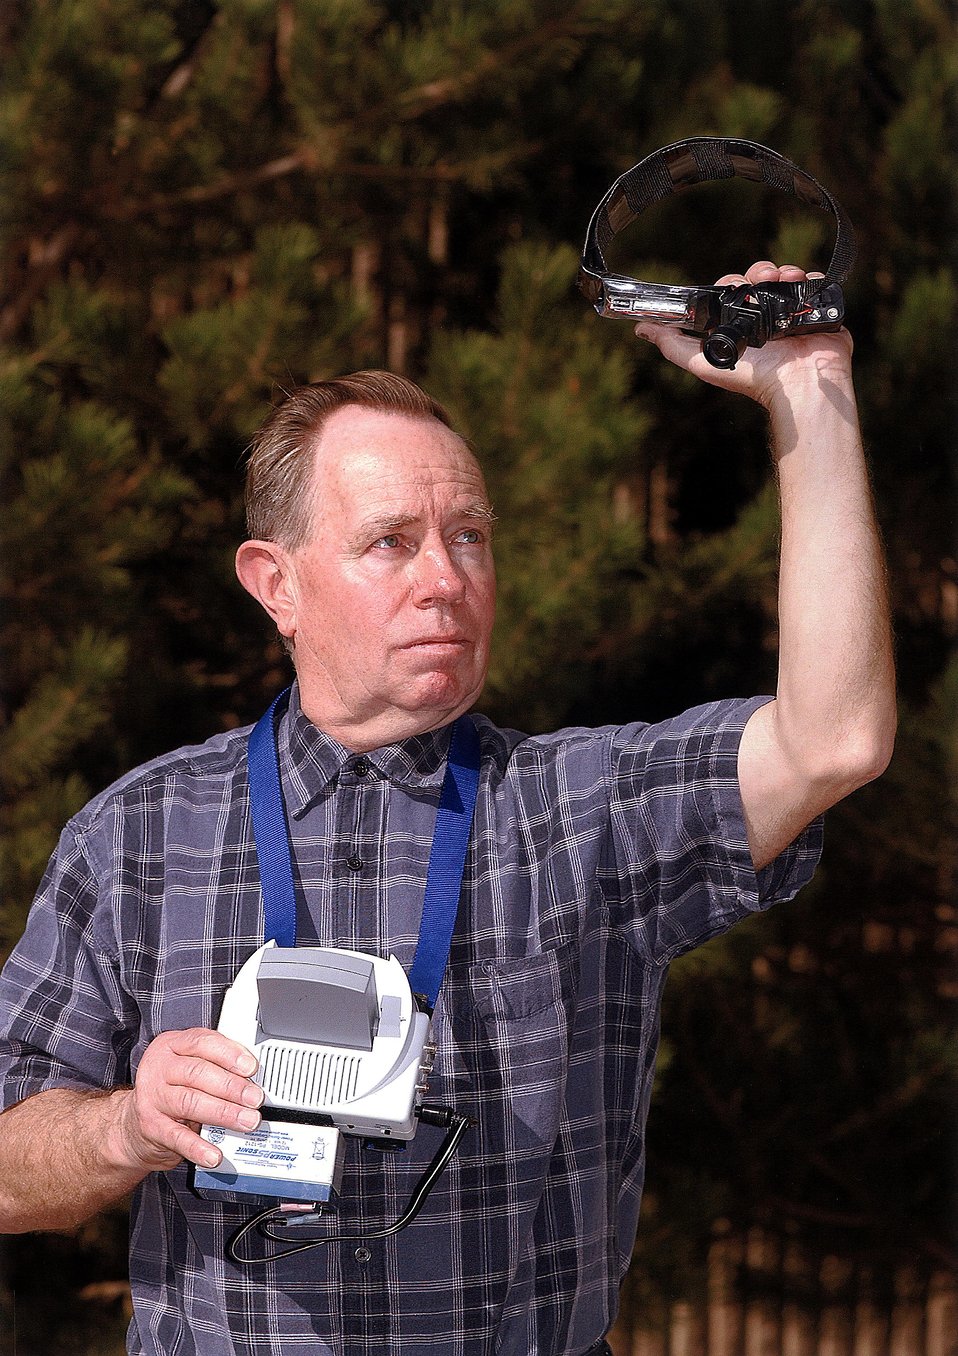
SANDIA RESEARCHER EXAMINES A K-9 COLLAR CAMERA AND TV VIDEO MONITOR/RECEIVER KIT.

SNL IS EXPLORING TINY CAMERAS ATTACHED TO A DOG'S COLLAR, AND RADIO SIGNALS THAT TRAVEL THROUGH WALLS TO A HAND HELD TV SCREEN WHICH MAY GIVE POLICE OFFICERS AND EMERGENCY RESPONDERS K-9 VISION FROM SAFE POSITIONS. SNL BEGAN EVALUATING THE WIRELESS VIDEO CAMERAS AND HAND HELD VIDEO RECEIVERS IN APRIL 2001 AS PART OF A NATIONAL INSTITUTE OF JUSTICE FUNDED PROJECT TO ASSESS WHETHER K-9 CAMERAS COULD ASSIST POLICE SWAT AND RESCUE TEAMS.